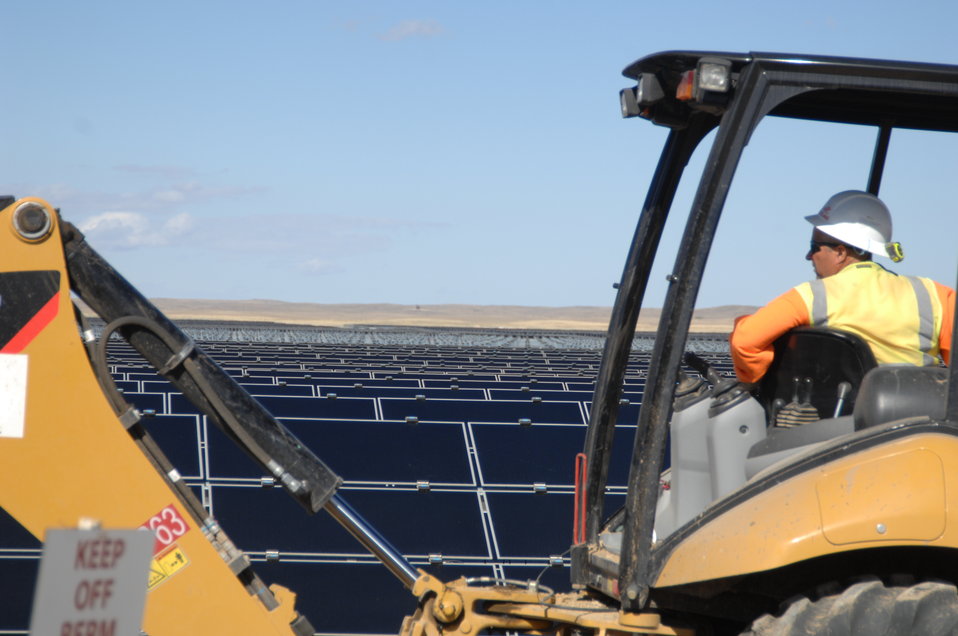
Work at Topaz Solar 2